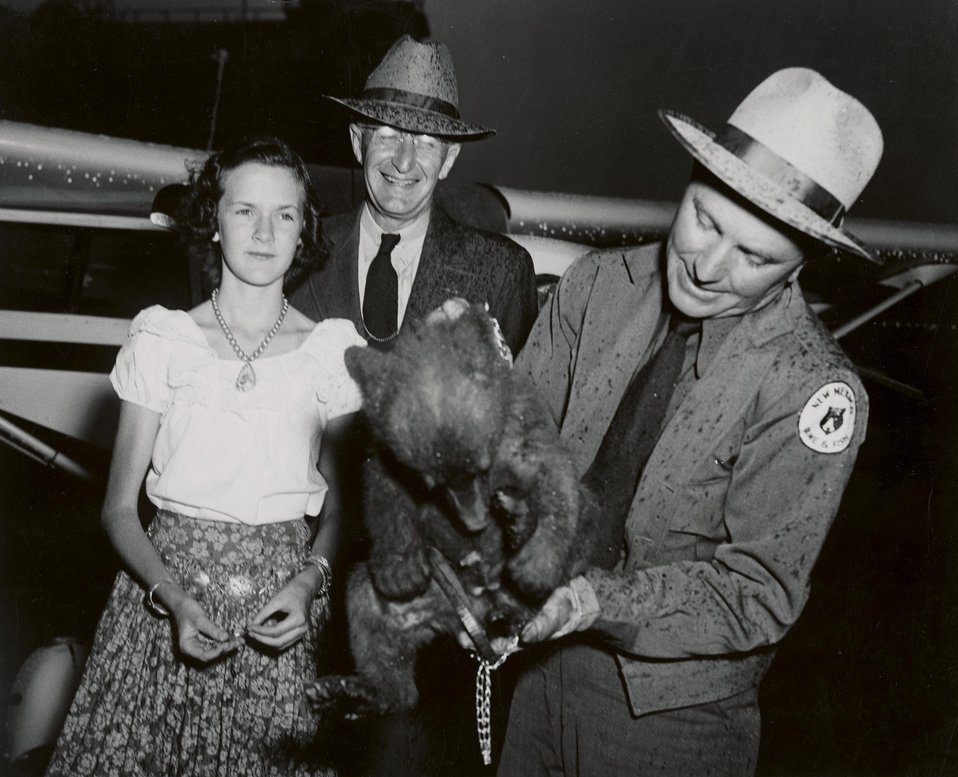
Arriving in Washington, D.C., forest fire victim 'little hotfoot” (renamed Smokey Bear) was greeted by U.S. Forest Service Chief Lyle F. Watts (center) in the rain. A U.S. Forest Service Ranger and Albuquerque, N.M. school children representative Stanlee Ann Miller accompanied the animal.